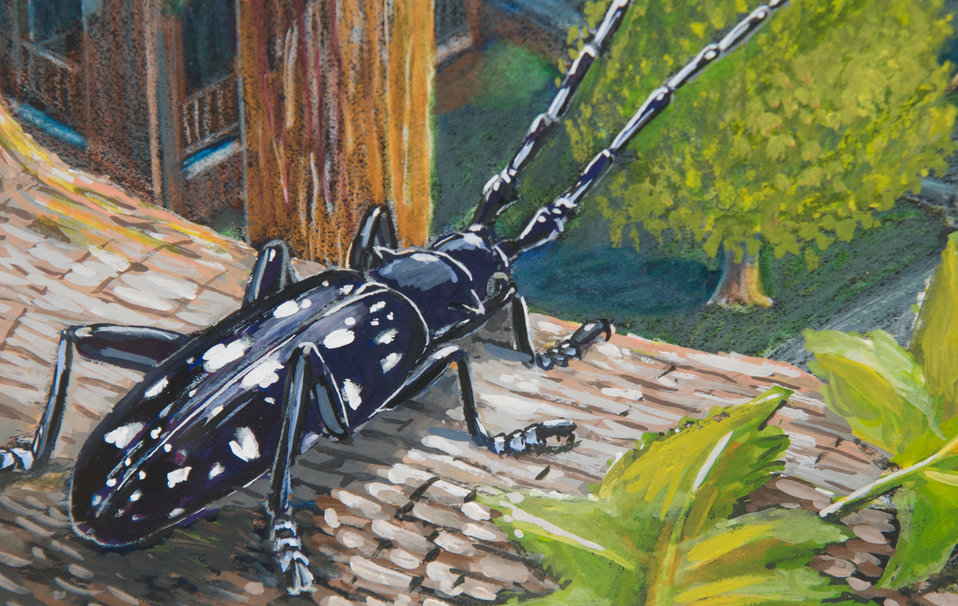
Online Viewer's Choice entries of the 2013 Art & Agriculture, Tuesday, July 9, 2013, in the South Building, Washington, D.C. Themes were expressed by employees from across the department and the contest was open to full-time and part-time USDA employees. Winning artwork will be displayed till the end of the year. U.S. Artistic expression is a creative outlet that is vital for an individual to grow and develop.